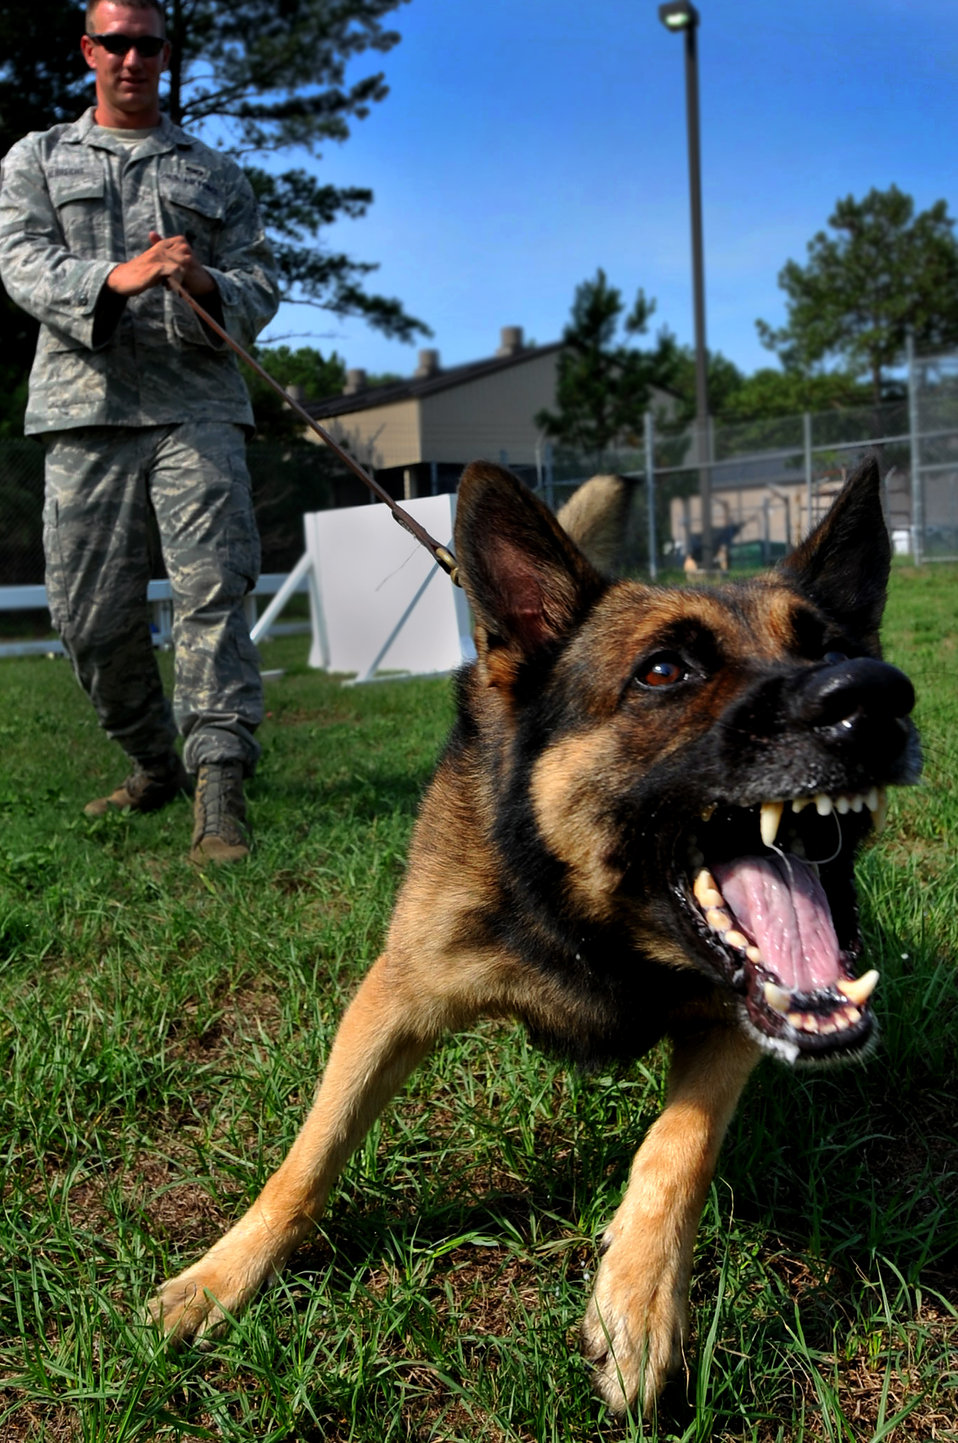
20th Security Forces Squadron Military Working Dog

Military working dog Markey viciously charges forward just before Staff Sgt. Jason Albrecht, a 20th Security Forces Squadron senior military working dog handler, lets him off of his leash during suspect pursuit training July 13, 2011, at Shaw Air Force Base, S.C. The 20th SFS MWD trainers work hard to train and prepare dogs, like Markey, for real world situations, such as drug raids, patrols and other specialized mission functions for the Department of Defense and government agencies.